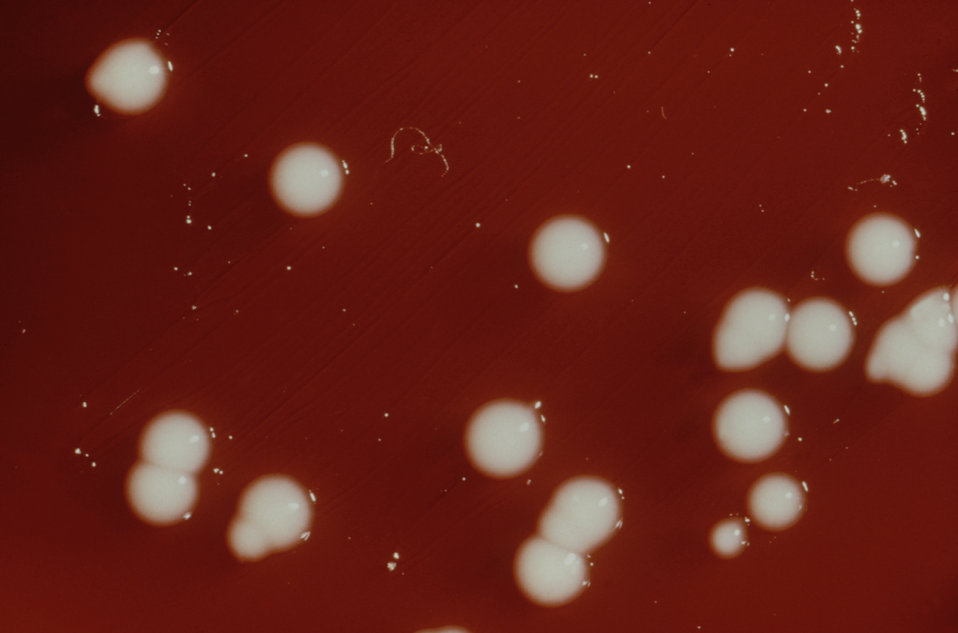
This blood agar plate (BAP) grew colonies of Gram-negative, small rod-shaped and facultatively anaerobic Klebsiella pneumoniae bacteria.